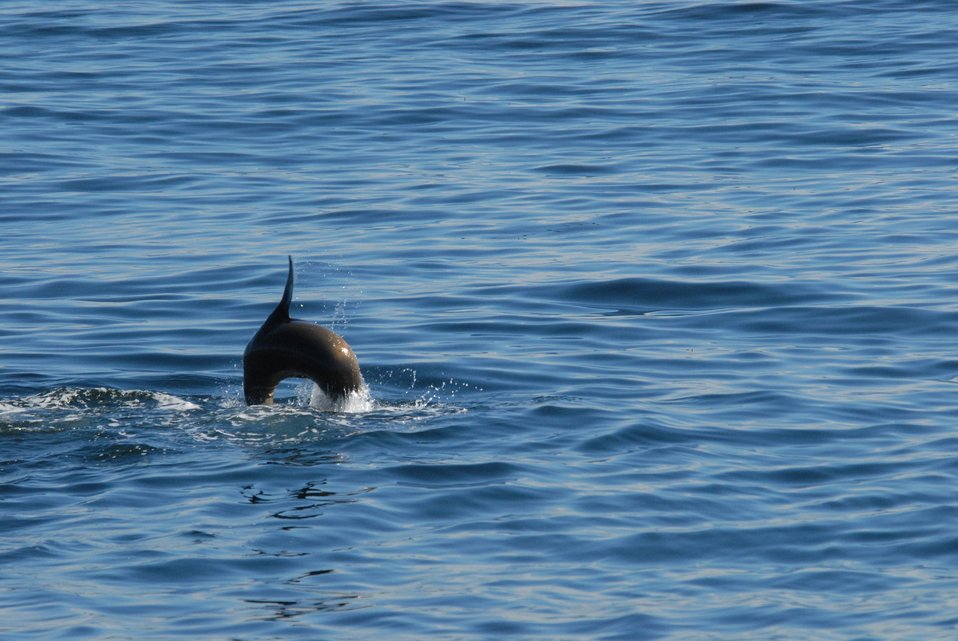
California sea lion putting on an acrobatic display